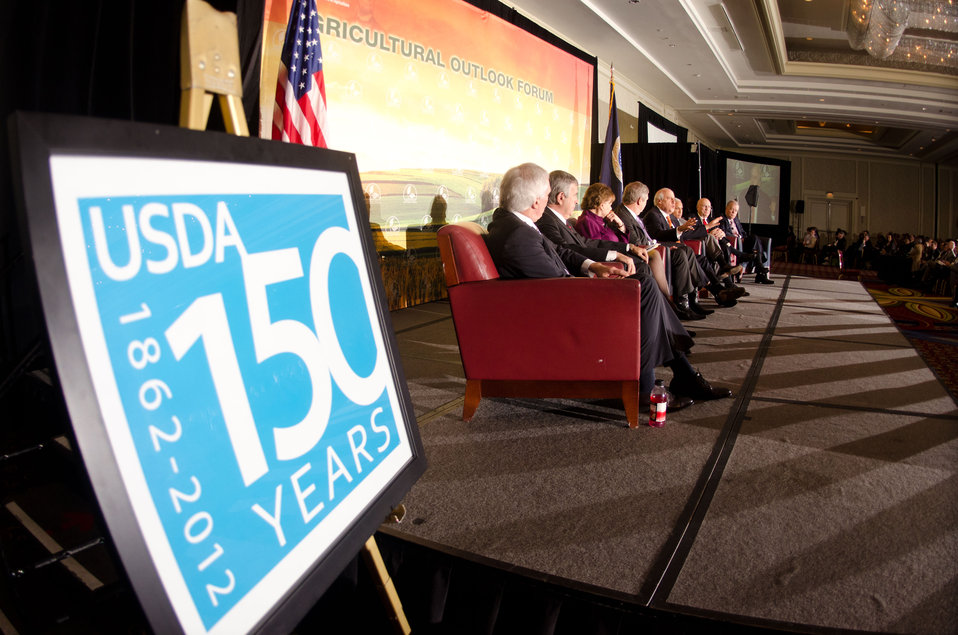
At the 2012 Agricultural Outlook Forum, “Moving Agriculture Forward” in Arlington, VA, held on Thursday, February 23, 2012, 7 former Secretaries of Agriculture sat on the plenary panel “Visions of the Future” hosted by current Agriculture Secretary Tom Vilsack (L to R Governor Ed Schafer (ND), Senator Mike Johanns (NE), Ann Veneman, Agriculture Secretary Tom Vilsack, Congressman Dan Glickman (KS), Congressman Mike Espy (MS), Clayton Yeutter, and John Block).